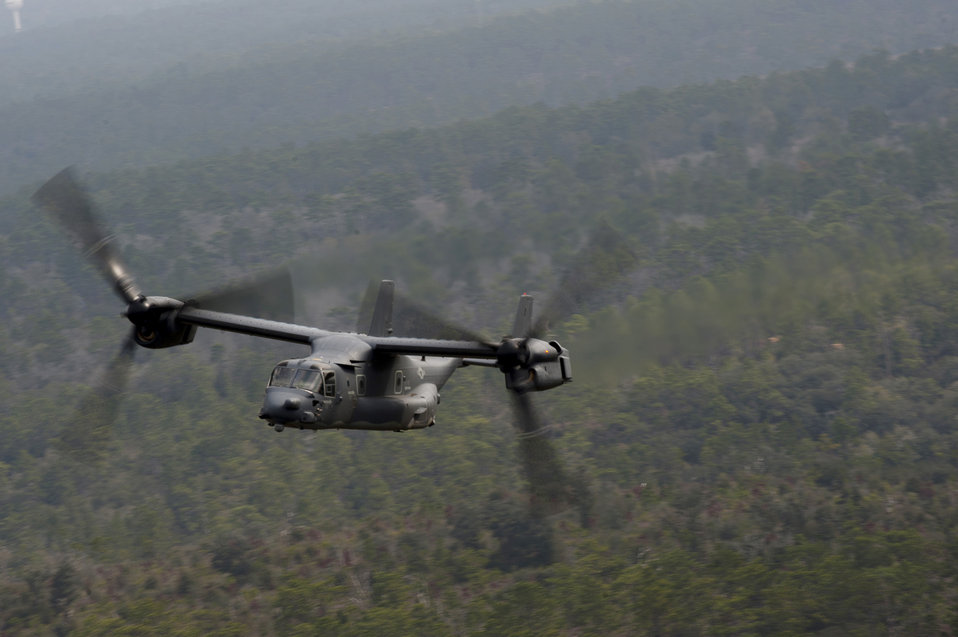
Osprey training mission

Pilots fly during a training mission Feb. 1, 2011, at Hurlburt Field, Fla.